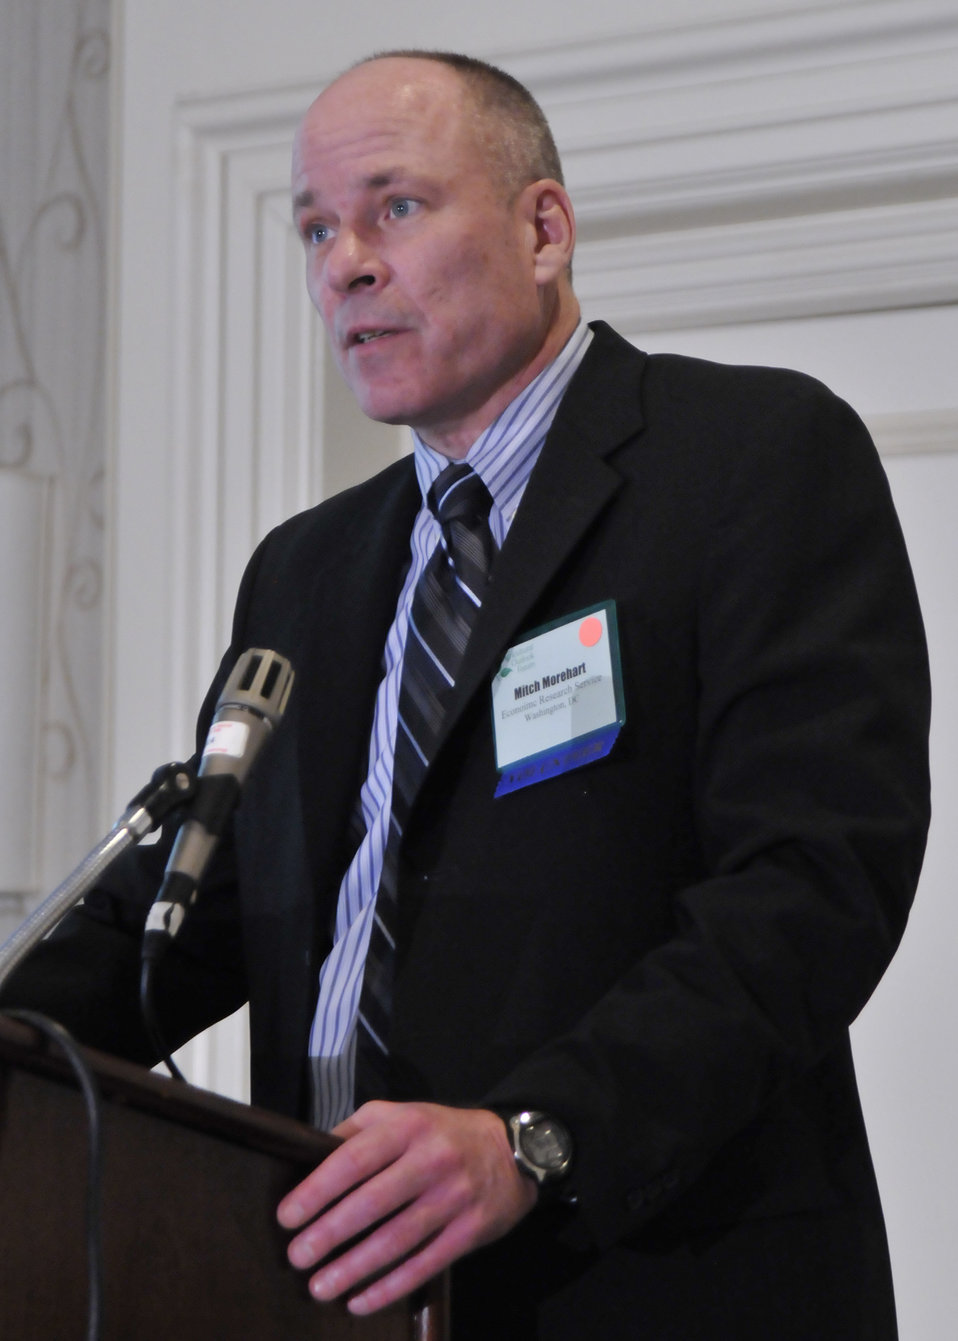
Mitch Morehart, Senior Economist, Farm and Rural Business Branch, Resources & Rural Economics Division, Economic Reserch Service, U.S. Department of Agriculture moderates the Land Tenure Issues & Income breakout session at the World Agriculture Outlook Board Forum in Arlington, VA, on Thursday, February 24, 2011.